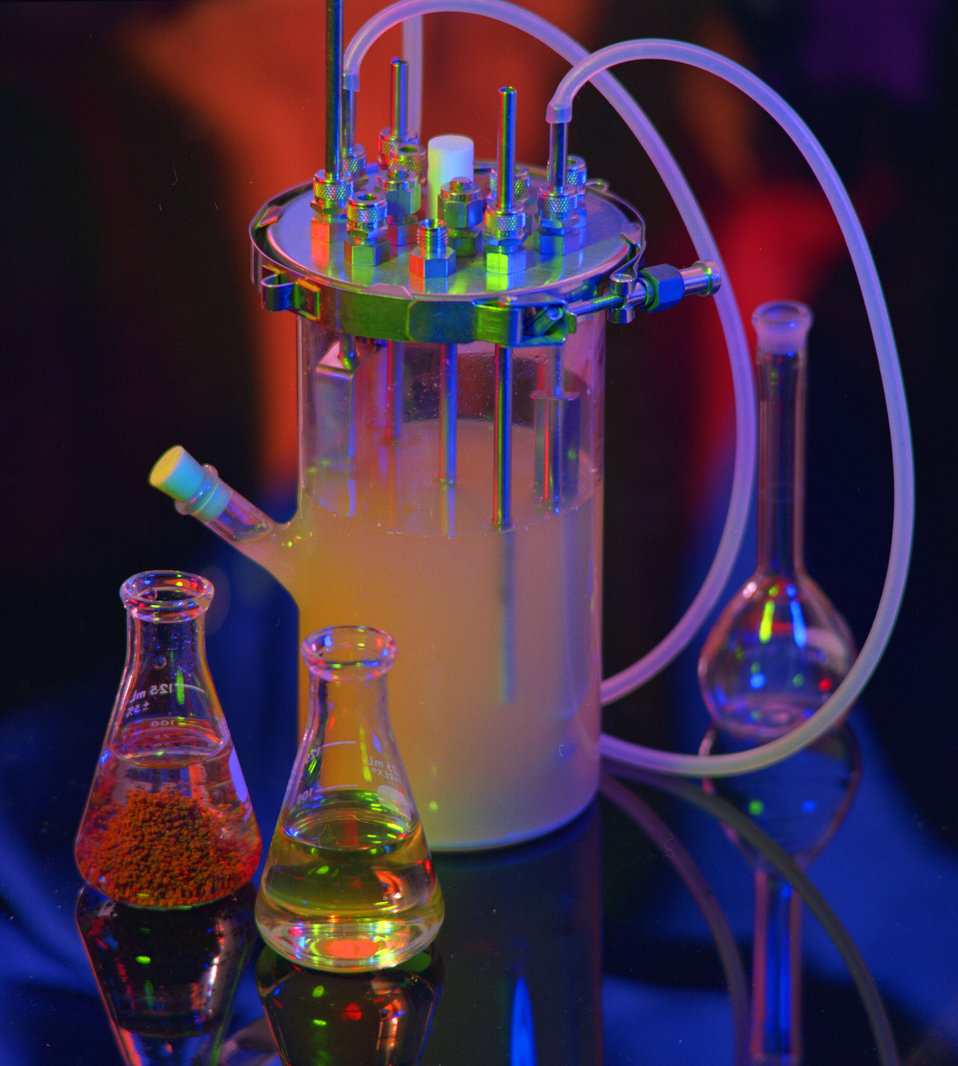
Lab equ. Oak Ridge National Lab.

97-326-1 DOE photo by Lynn Freeny